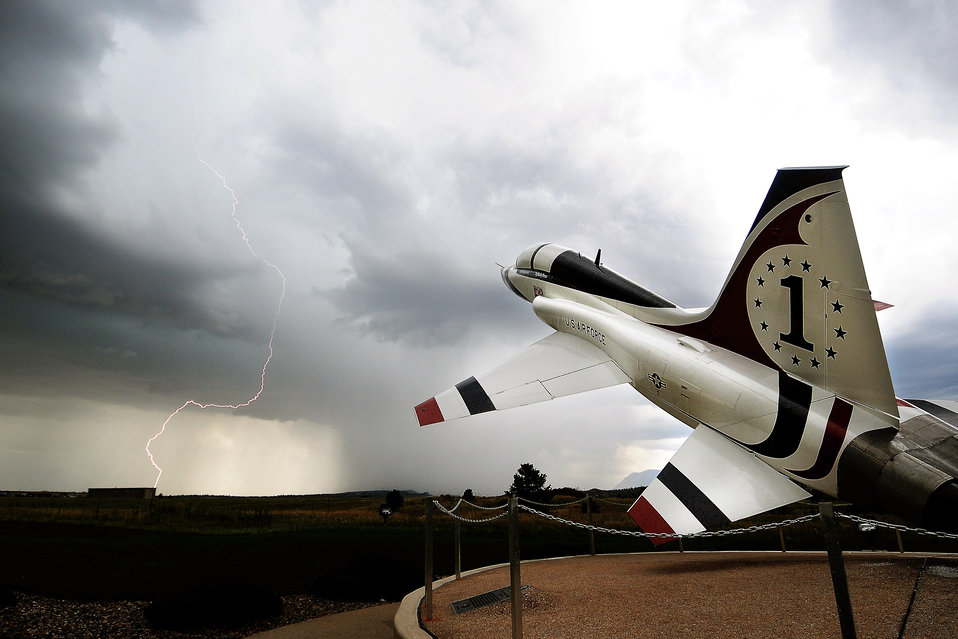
Vintage Thunderbird

Framed by lightning, a T-38 Talon from the 1982-era Thunderbird team sits on static display Aug. 2, 2010, at the Air Force Academy in Colorado Springs, Colo.